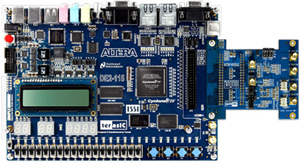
AT ARGONNE NATIONAL LABORATORY, FIELD PROGRAMMABLE GATE ARRAY (FPGA) TECHNOLOGIES TO DEVELOP IMPROVED SOFTWARE-DEFINED RADIOS FOR THE SMART GRID.

This wireless technology, which allows one radio to use different frequencies depending on needs at the time, will provide more bandwidth for electric utilities to communicate with consumer vehicles. ANL researchers have developed a software0defined radio technology in a low-cost FPGA device that would enable electric vehicle-to-grid interoperability for a wide variety of infrastructure resources.